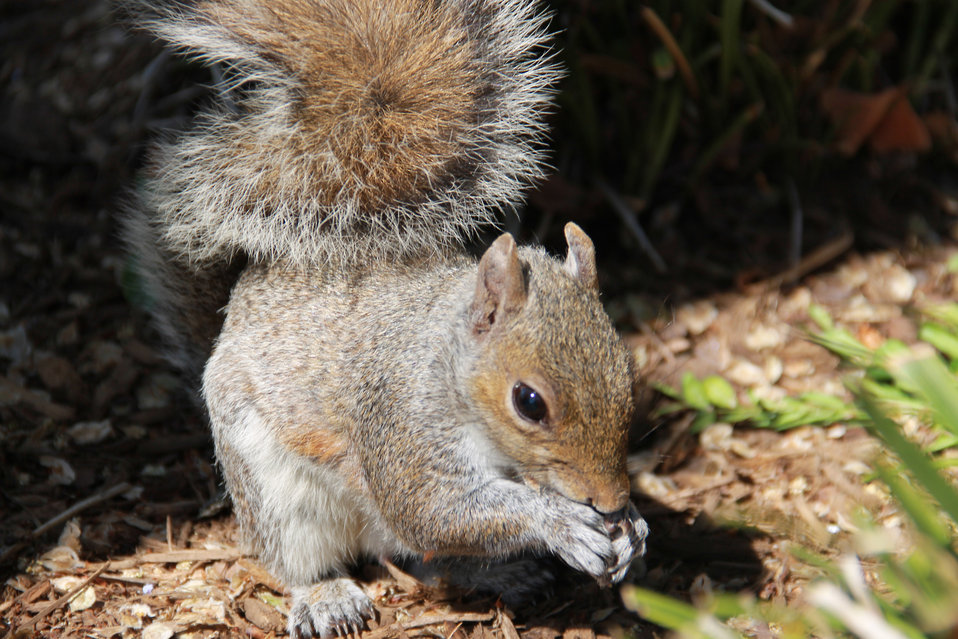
Capitol Hill Squirrel

The AOC has recently uncovered 113 years of history surrounding squirrels on Capitol Hill: www.aoc.gov/cc/grounds/Squirrels-on-the-Capitol-Grounds.cfm.